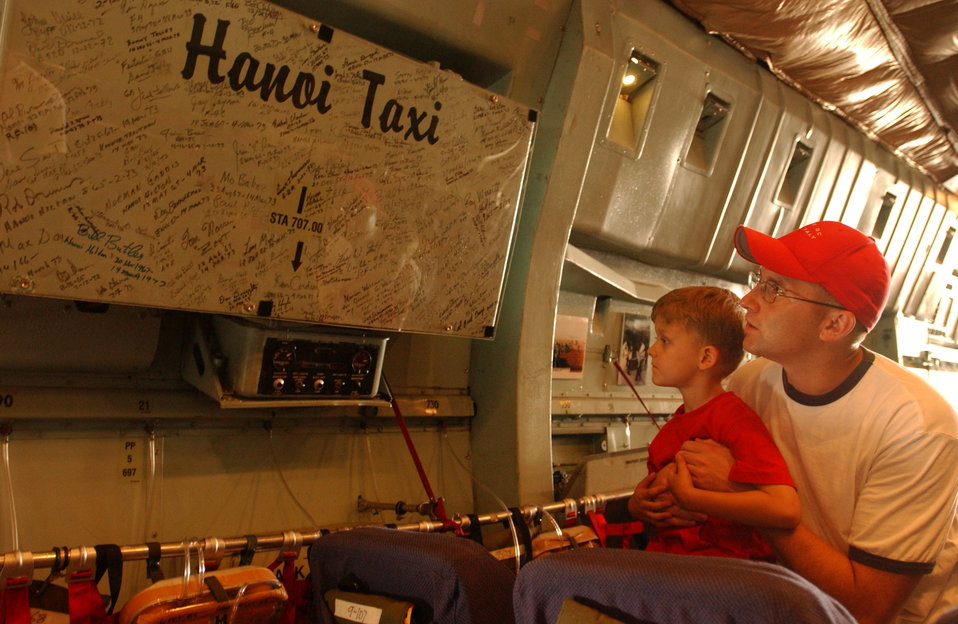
The Taxi

AVIANO AIR BASE, Italy -- Tech. Sgt. Robert Schultz shows his son, Jordan, the wall of signatures aboard a C-141 Starlifter here June 25. This wall was signed by prisoners of war leaving Vietnam. Along with the wall, the plane is lined with photos of the POWs coming home. The aircrafts nickname is the "Hanoi Taxi."